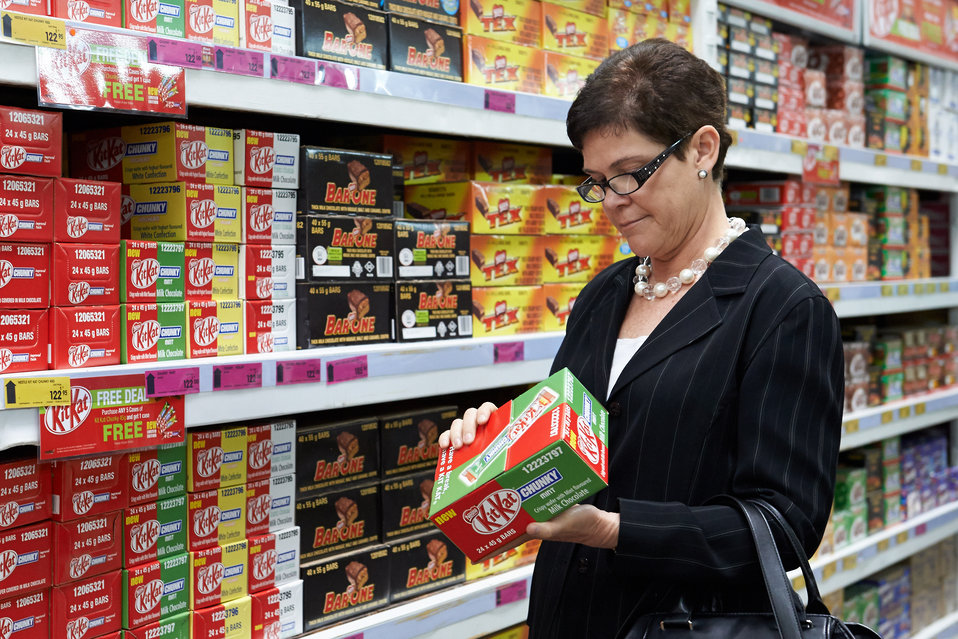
Agriculture Deputy Secretary Krysta Harden walks through market in Johannesburg, South Africa on Tuesday, Sep. 17, 2013. Agriculture Deputy Secretary Krysta Harden led a trade mission to the Sub-Saharan Africa Business Round Table to promote U. S. agricultural trade and investment in the region, which is a long-term goal of the initiative. The trade mission includes 17 U.S. companies and 15 agricultural trade associations that represent a variety of products such as snack foods, beverages, fruit, nuts, and more.